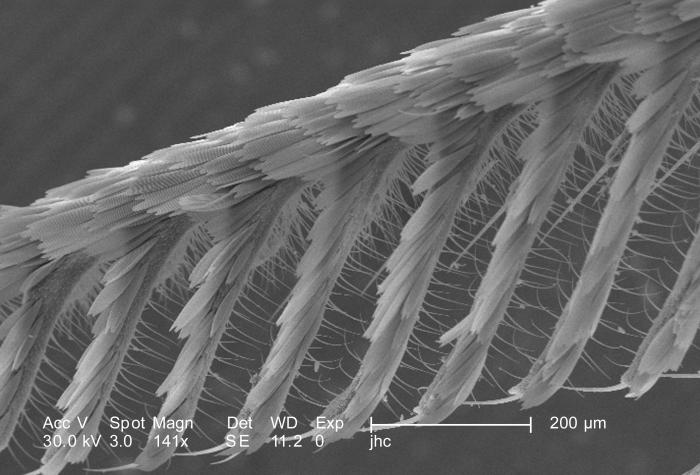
Under a moderate magnification of 141X, this scanning electron micrograph (SEM) revealed some of the ultrastructural morphology located on the head region of an unidentified white moth, which had been found deceased on the ground in the suburbs of Decatur, Georgia. In this particular view, the feather-like structure of the moth's antenna was made evident. This sensorial organ was made even more sensitive by the increase in its surface area due to the nature of its scalar surface. You'll also note the presence of small 'setae' or 'hairs', which added further to the antenna's sensitivity.